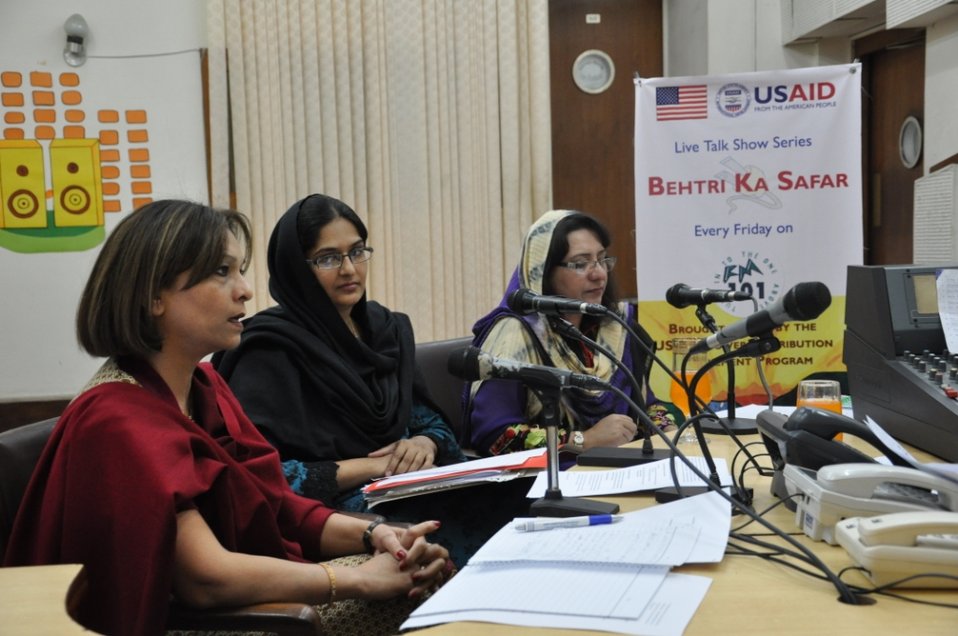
4 Nov - Program 7 on Gender Empowerment

IESCO’s Ms. Aamna Rizwan Assistant Manager HR. Ms. Mussarat Customer Services IESCO and USAID Power Distribution Program’s Gender Strategy lead Ms. Qurat ul Ain on FM 101 talking about the role of DISCOs, effective energy saving habits, and encouraging young women to join the utility sector.